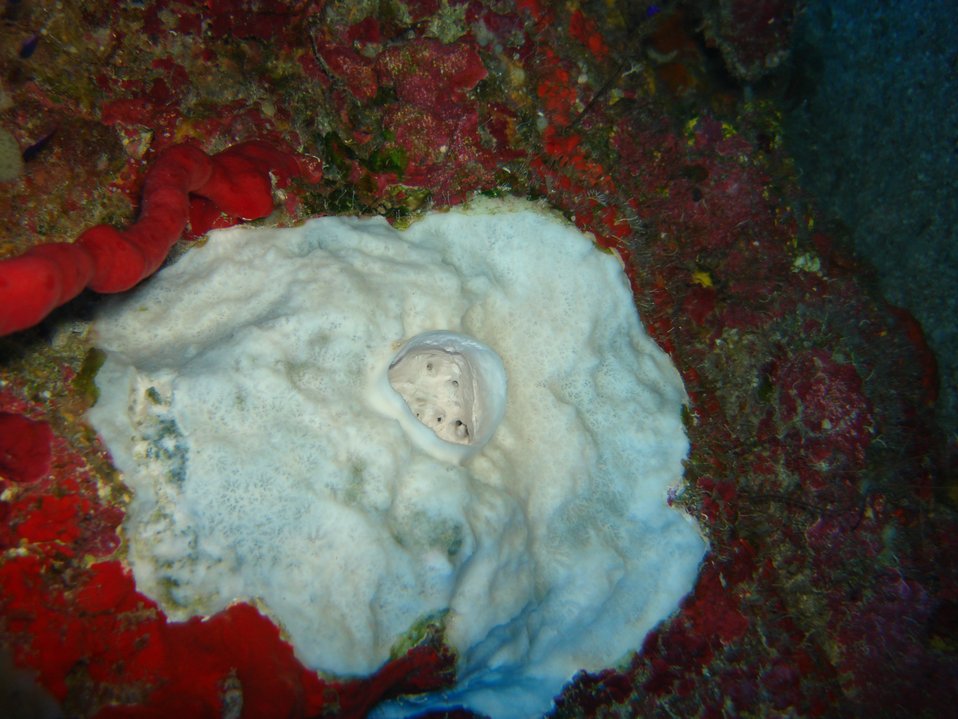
White sponge